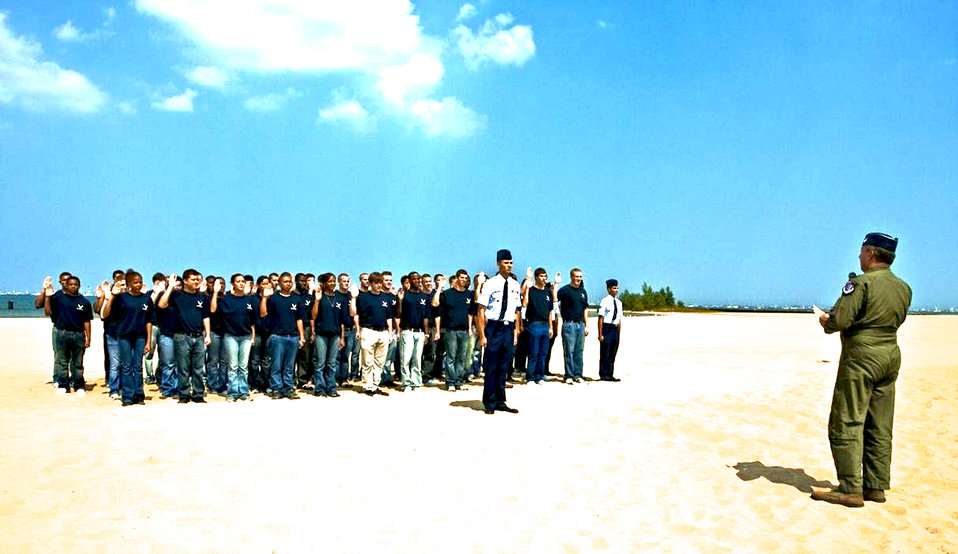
New recruits enlist at Chicago Air and Water Show

Recruits from the Chicago area take the oath of enlistment in front of thousands of spectators Aug. 15 during the 51st Chicago Air and Water Show. It is the nation's largest free air show and an estimated 2.2 million people attend. Maj. Gen. Gregory Feest, commander of Air Education and Training Command's 19th Air Force at Randolph Air Force Base, Texas, conducted the oath of enlistment ceremony. General Feest is responsible for all Air Force pilot training.